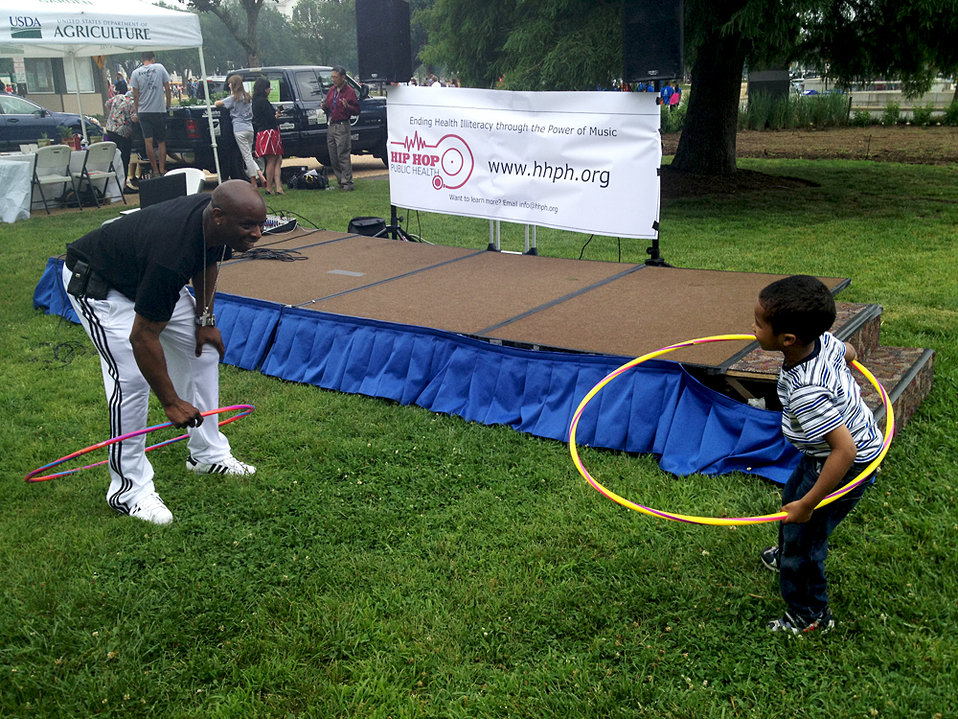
Bronson Brown sways with music producer Artie Green with a hula hoop on the opening day of the U.S. Department of Agriculture (USDA) Farmers Market, in Washington, D.C. on June 1, 2012. Children had the opportunity to participate in a day filled with hands-on activities to help enhance their commitment to healthy eating and 60 minutes of physical activity every day.